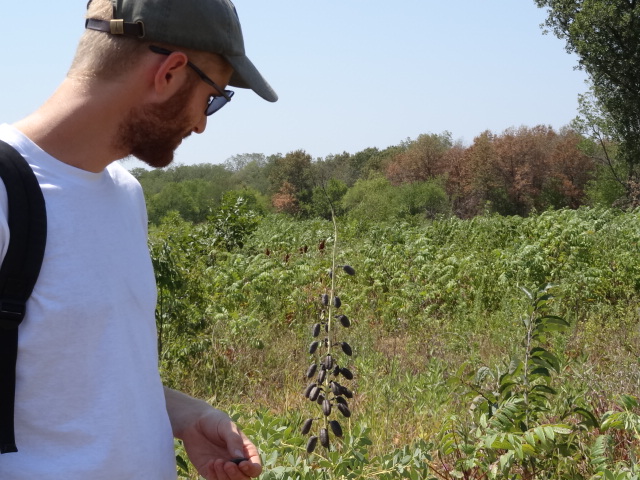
Partnerships

Marais des Cygnes NWR SCA Intern